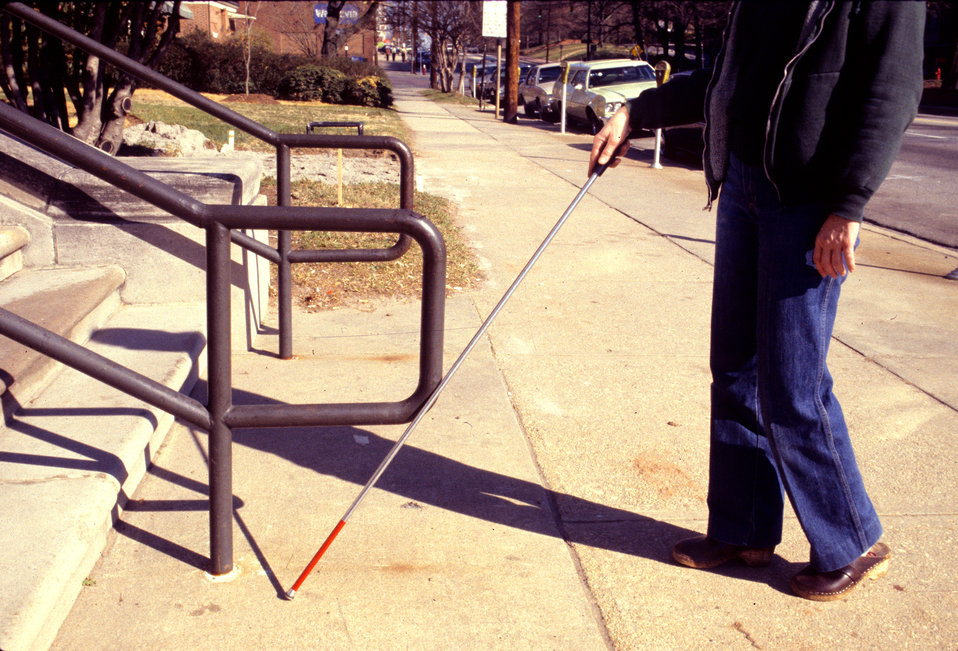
This 1994 image depicted a blind woman using a walking cane who was about to interact with a number of outdoor stairs. Ergonomically designed to accommodate all users, the stair rails were equipped with hand rail extensions, which enabled the visually impaired, such as the visitor depicted here, to tap the rail prior to interacting with the more challenging steps. Such 'add-ons' are often beneficial to both the mobility-challenged, as well as those who are not, for they are designed with underlying user universality at their core.